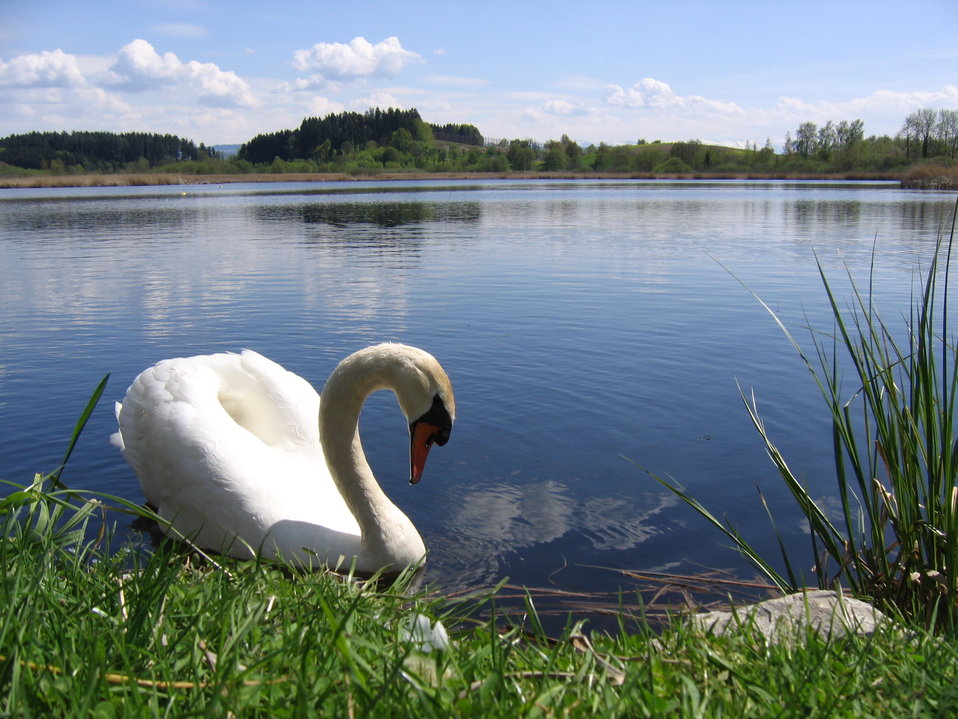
Deutsch: Deutschland - Baden-Württemberg - Bodenseekreis - Neukirch: Naturschutzgebiet Kreuzweiher-Langensee